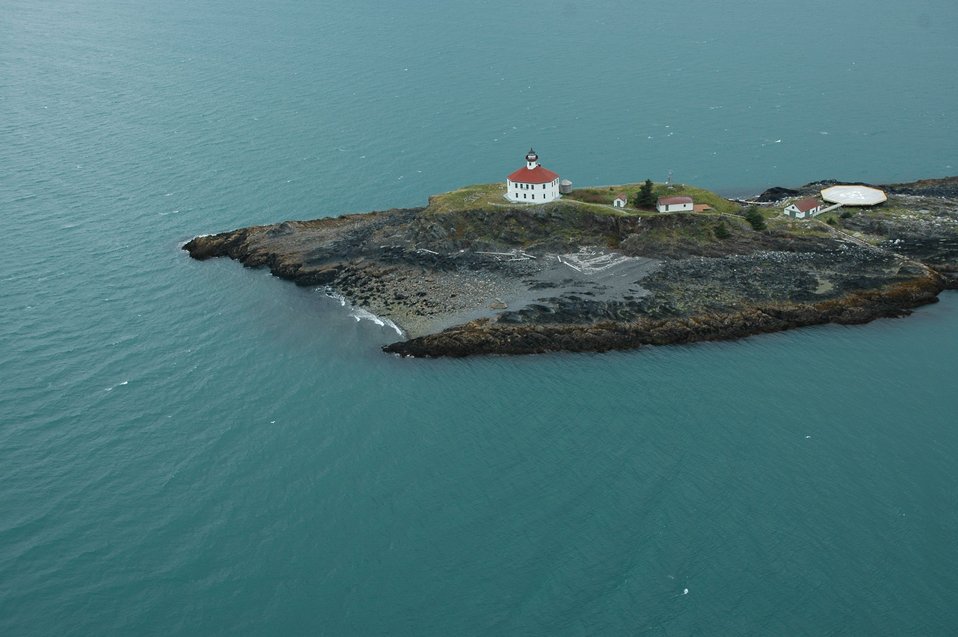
Aerial photograph. Eldred Rock Lighthouse.